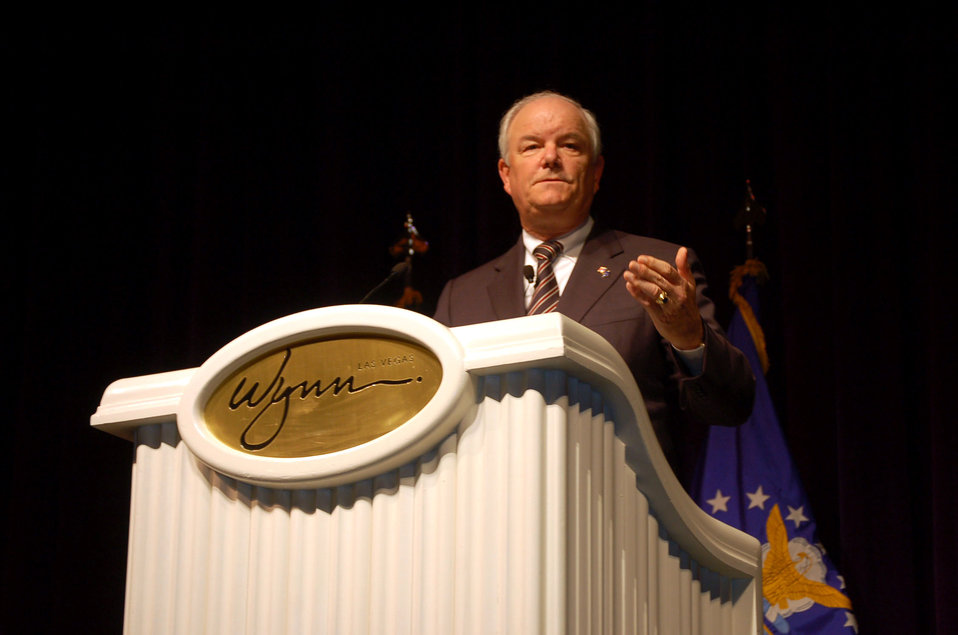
Secretary Wynne speaks at symposium in Las Vegas

Secretary of the Air Force Michael W. Wynne delivers his keynote speech to a crowd of more than 300 people during the 2007 Air and Space Leaders symposium at the Wynn Hotel and resort Nov. 8 in Las Vegas. The crowd included military members from several different nations and civilian industry leaders. The symposium was held in conjunction with the Heritage to Horizons event, which is a celebration of the Air Force's 60th anniversary.